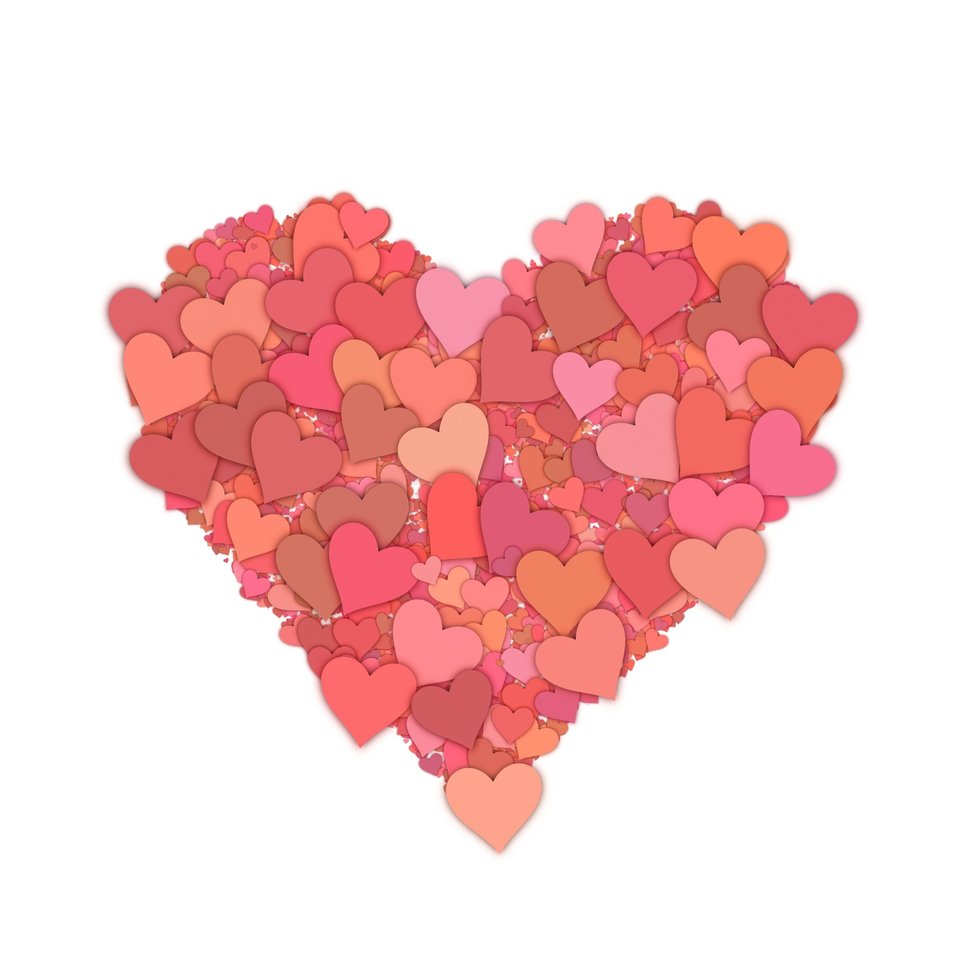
Many hearts

Heart shaped from many red pink hearts isolated on white background.